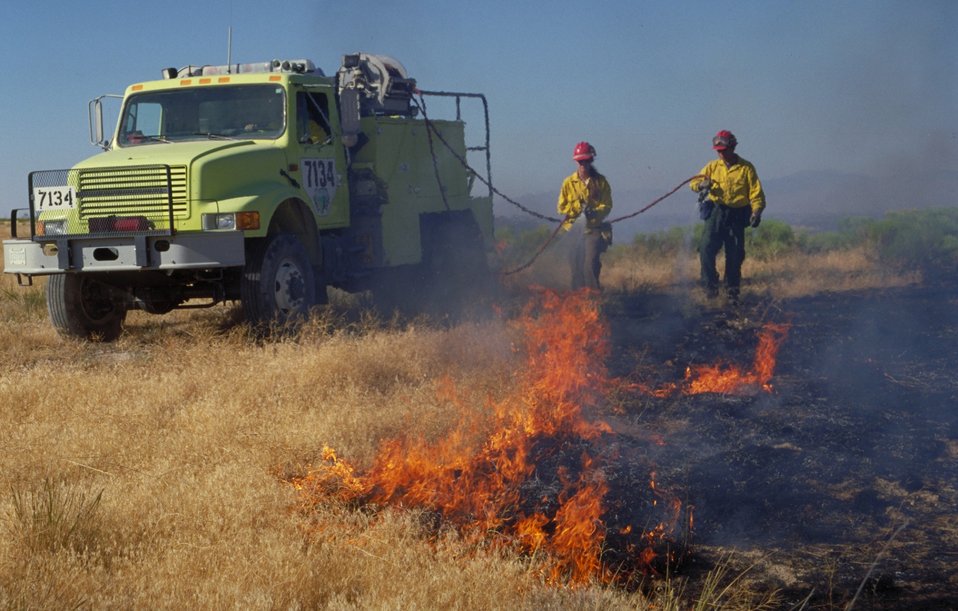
Prescribed burn Fire Season 2000 Lower Snake River District LSRD